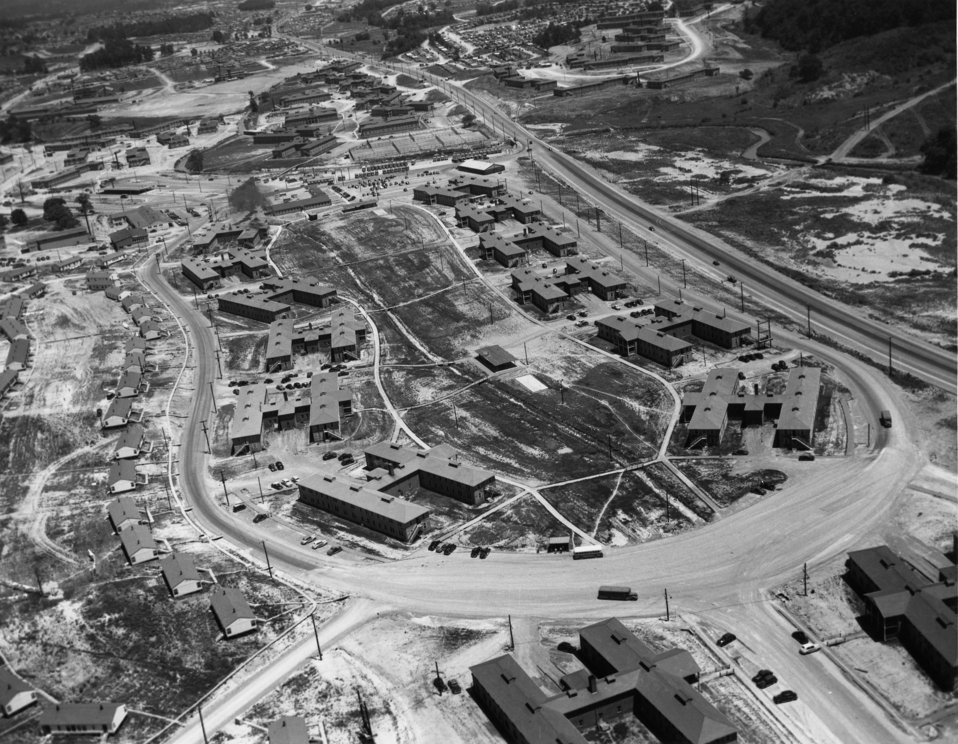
Aerial of Oak Ridge